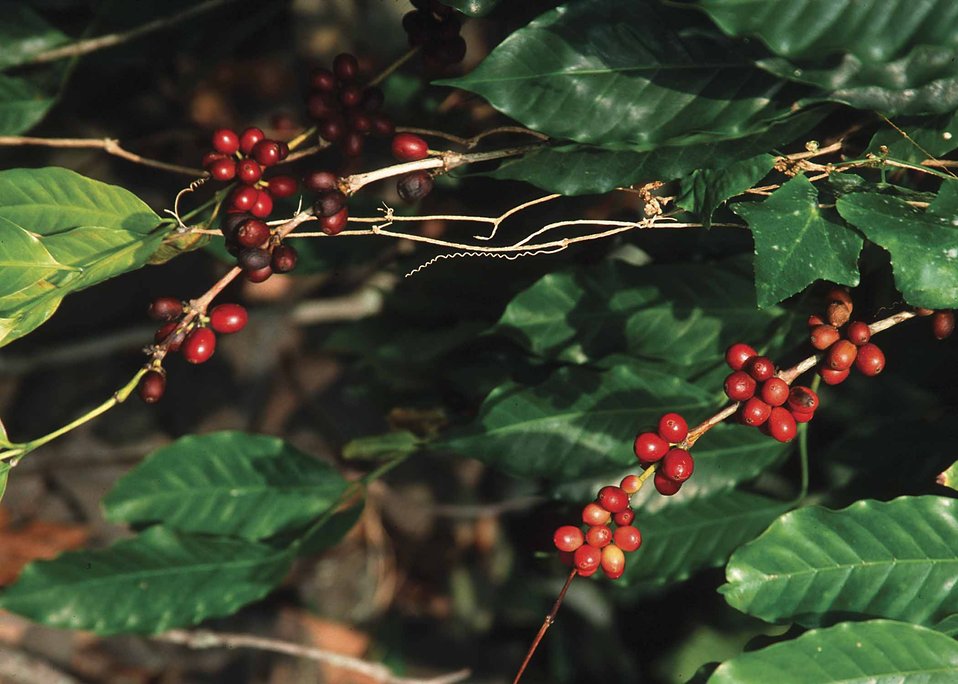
Close-up of a coffee plant in Hawaii.